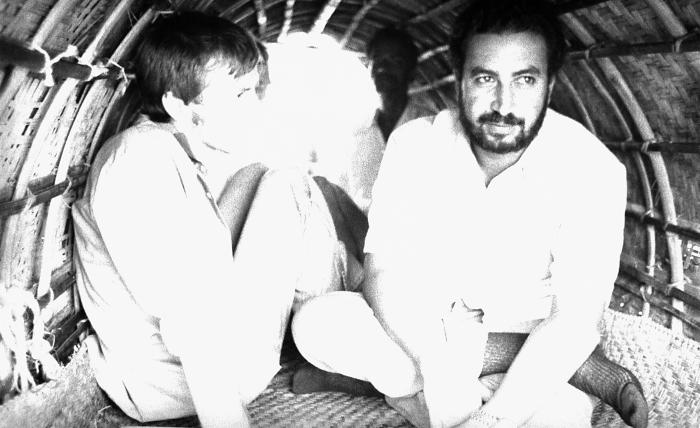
This image depicted two World Health Organization (WHO) epidemiologists as they were being transported in a thatch-roofed cart from one Bangladesh village to another. This photograph provided by Dr. Stan Foster, and captured by Pierre Claquin, M.D., B.A.C., who at the time was a member of the World Health Organization's Smallpox Eradication Program. It was part of a series photographed by former E.I.S. officer, Stanley O. Foster M.D., M.P.H., and was one of a series entitled 'The Story of One Smallpox Jeep', which depicted the travails faced by the jeep, and its occupants of public health practitioners, as they road through the Bangladesh countryside in an attempt to eradicate smallpox from the country.